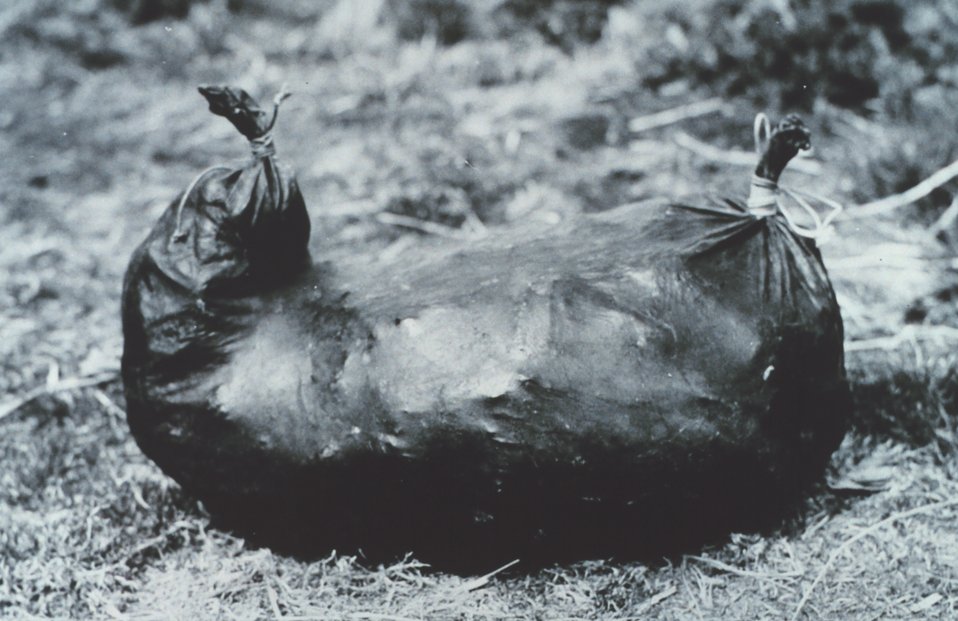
Stomach of a Sea Lion (Eumetopias jubata) used by Aleut natives for storing dried red salmon. F&WS B-50,242.